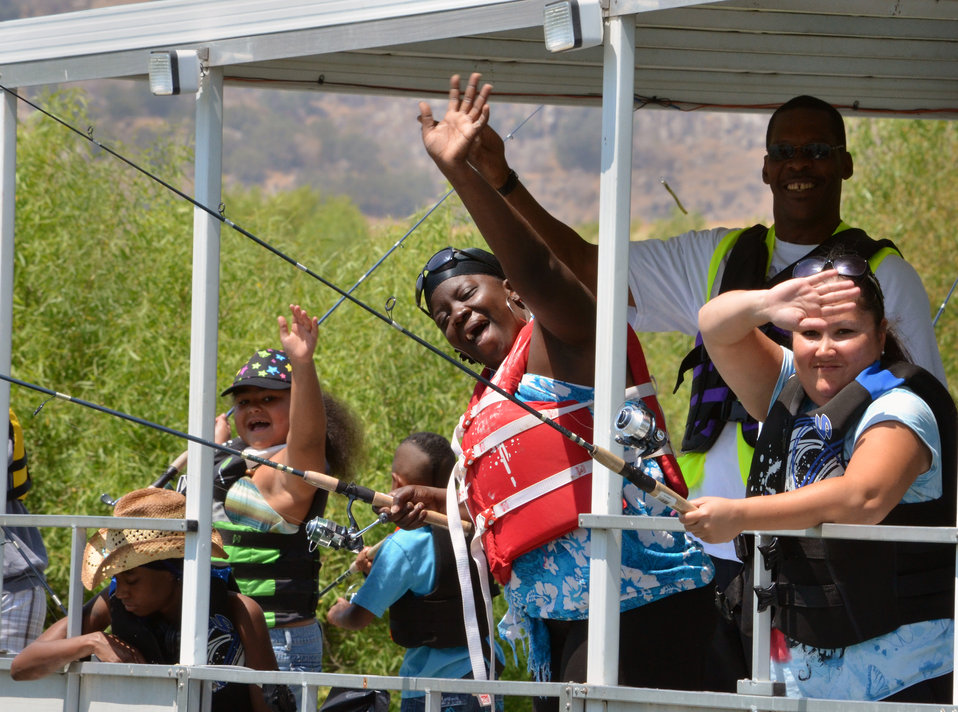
Fishing barge (“Take a Warrior Fishing” event at Success Lake)

Wounded warriors and their families enjoy a day fishing during the 'Take a Warrior Fishing' event at Success Lake, located near Porterville, Calif., May 4, 2013. This is the second year the U.S. Army Corps of Engineers Sacramento District has hosted the event. Photo cropped for emphasis.